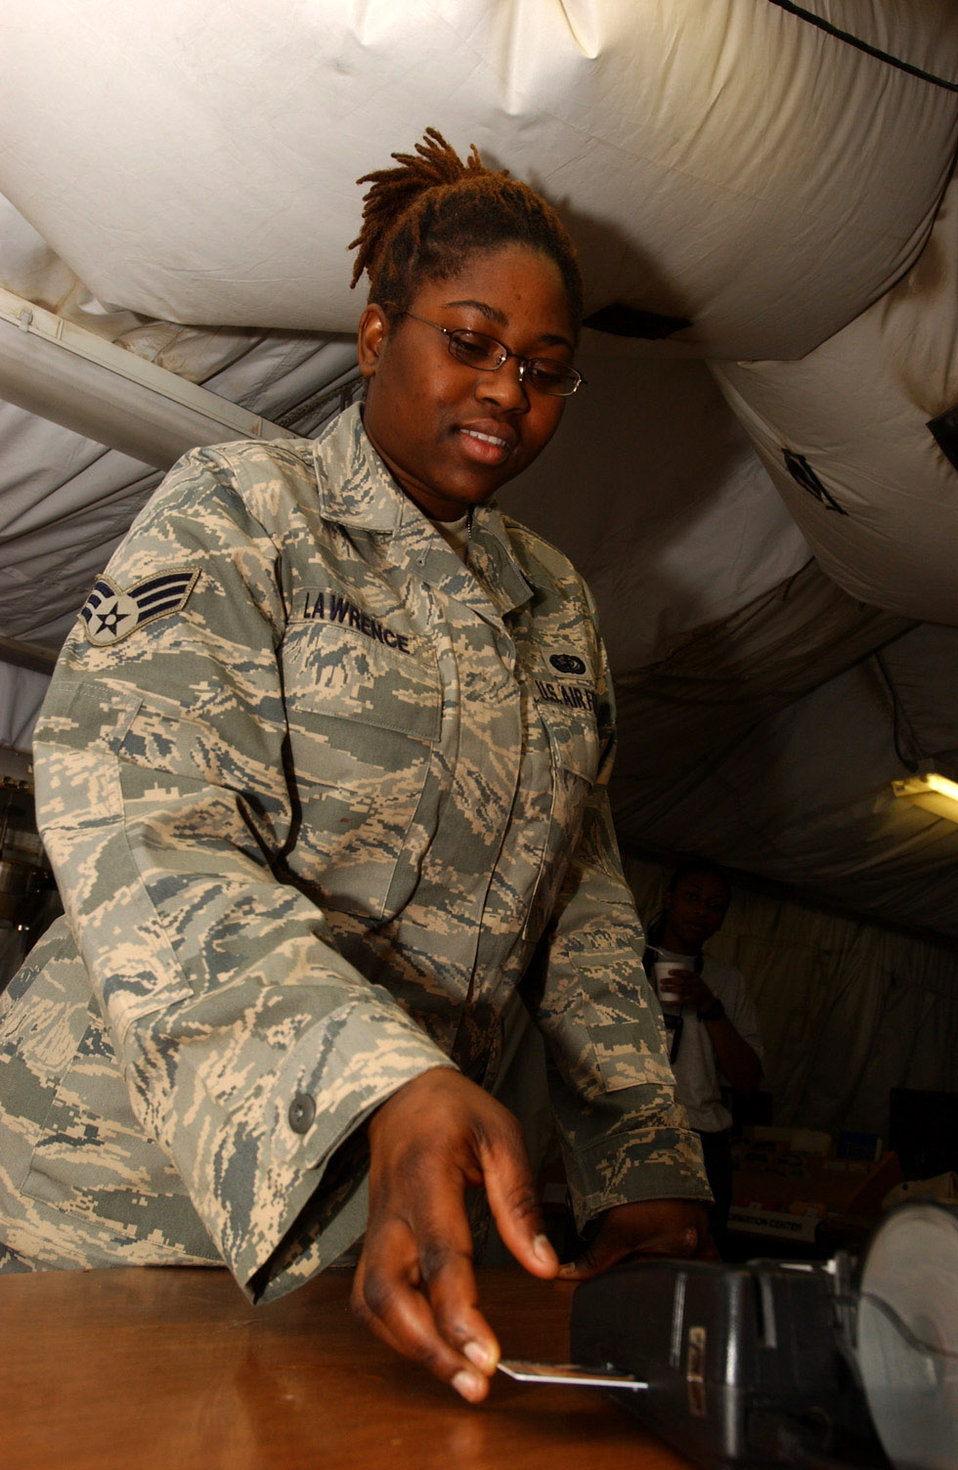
EagleCash lands at Ali

Senior Airman Shakira Lawrence slides an EagleCash card into a point of sale terminal Nov. 9. Ali Air Base was the last stop in Iraq for the EagleCash program to be implemented. The EC program provides instant access to funds electronically which potentially saves lives and thousands of dollars to transport hard currency in the area of responsibility. Airman Lawrence is assigned to the 407th Expeditionary Services Squadron and is deployed from Little Rock Air Force Base, Ark.